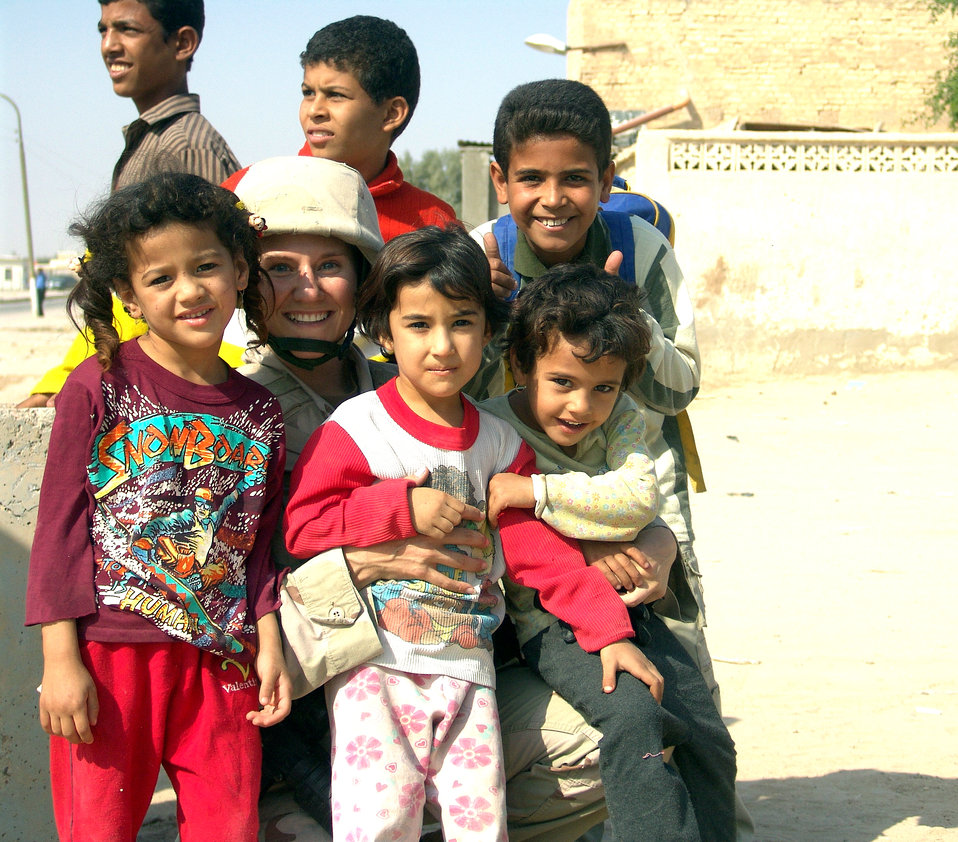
Humanitarian relief

UMM QASR, Iraq (AFPN) -- Senior Airman Jana Sautter poses with some Iraq children during a humanitarian relief mission in Umm Qasr, Iraq. Coalition forces delivered more than a thousand school supplies and toys to the children Nov. 14. Airman Sautter is assigned to the 568th Expeditionary Security Forces Squadron.